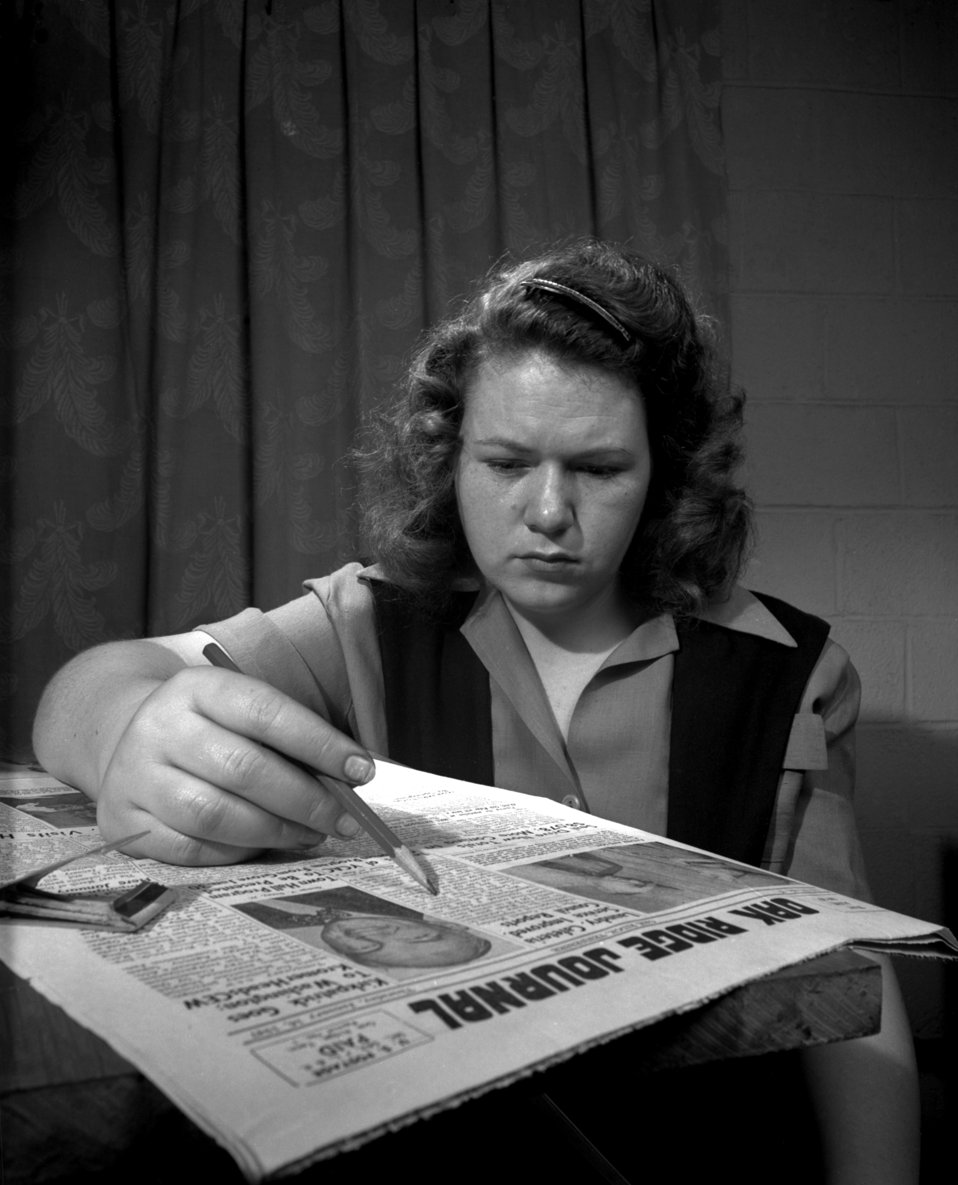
Helen Bean Test Wide Angle Lens Oak Ridge

3250-1 DOE photo Ed Westcott 1-1947 Oak Ridge Tennessee